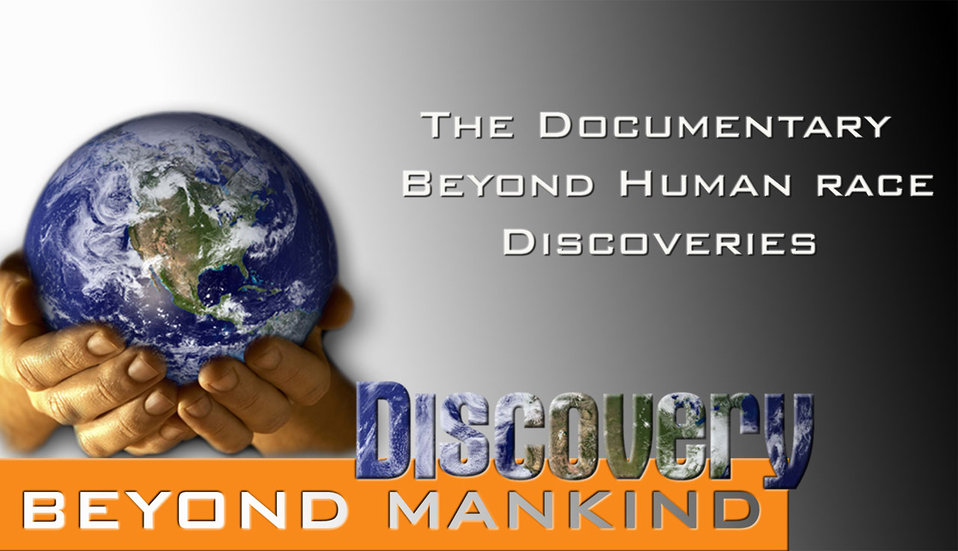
Beyond mankind discovery.